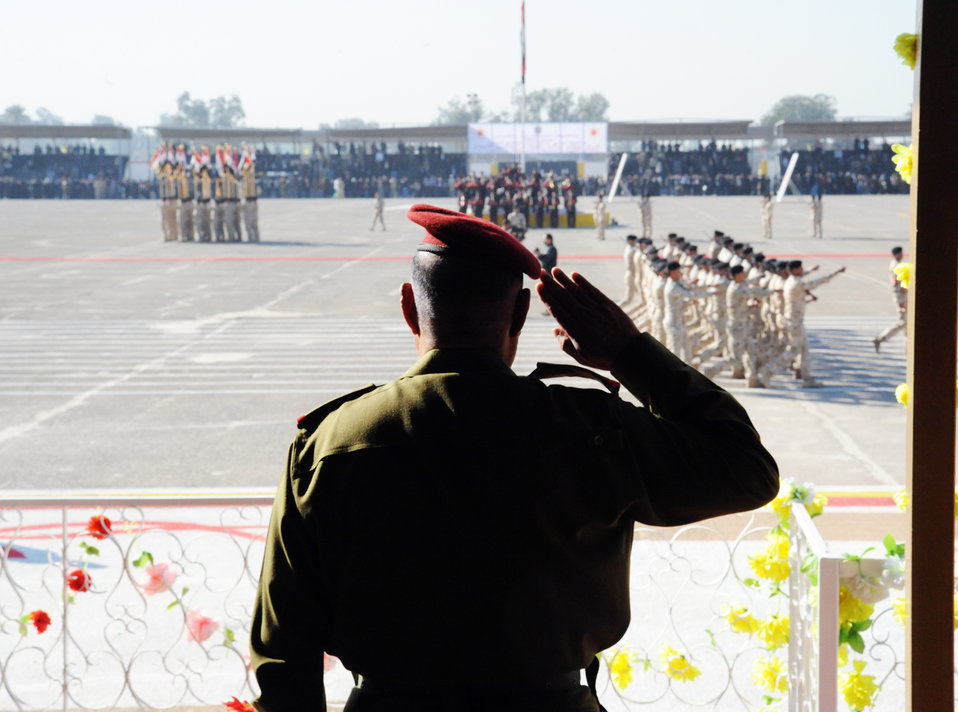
Iraqi air force graduates 247 cadets

Iraqi staff Gen. Aboud Ganbar salutes cadets during a pass in review at an Iraqi air force officer graduation ceremony Jan. 10, 2010, at the Iraqi Military Academy-Rustamiyah. General Ganbar is the deputy of the Iraqi army chief of staff for operations.